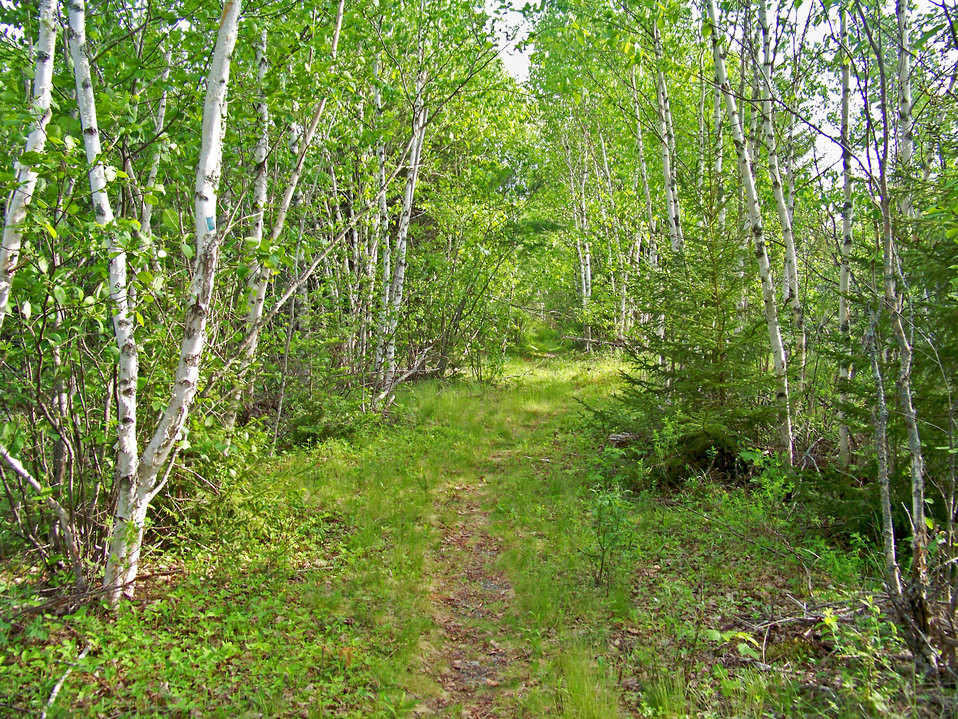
Moosehorn in spring